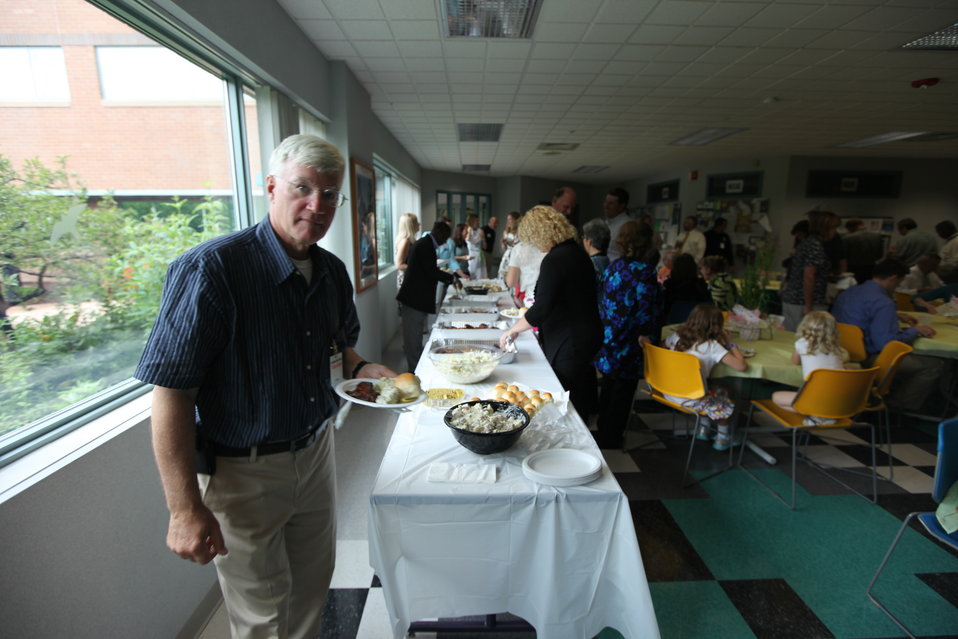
Northeast Region Employee Appreciation Awards

Luncheon